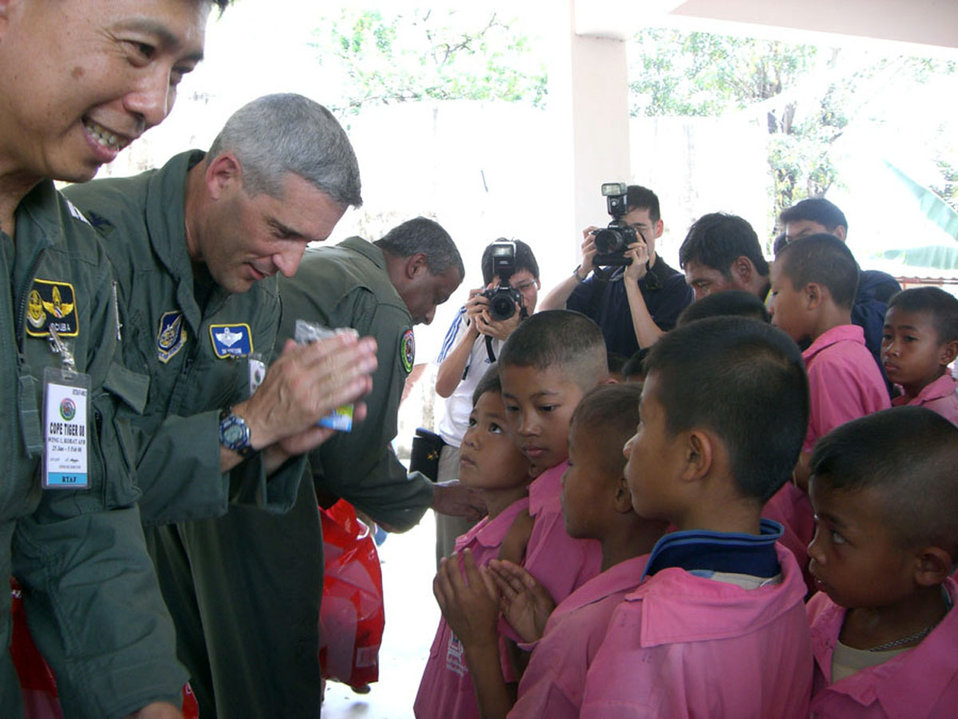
PACAF team donates to Thai school

Col. James Horton (center) returns a